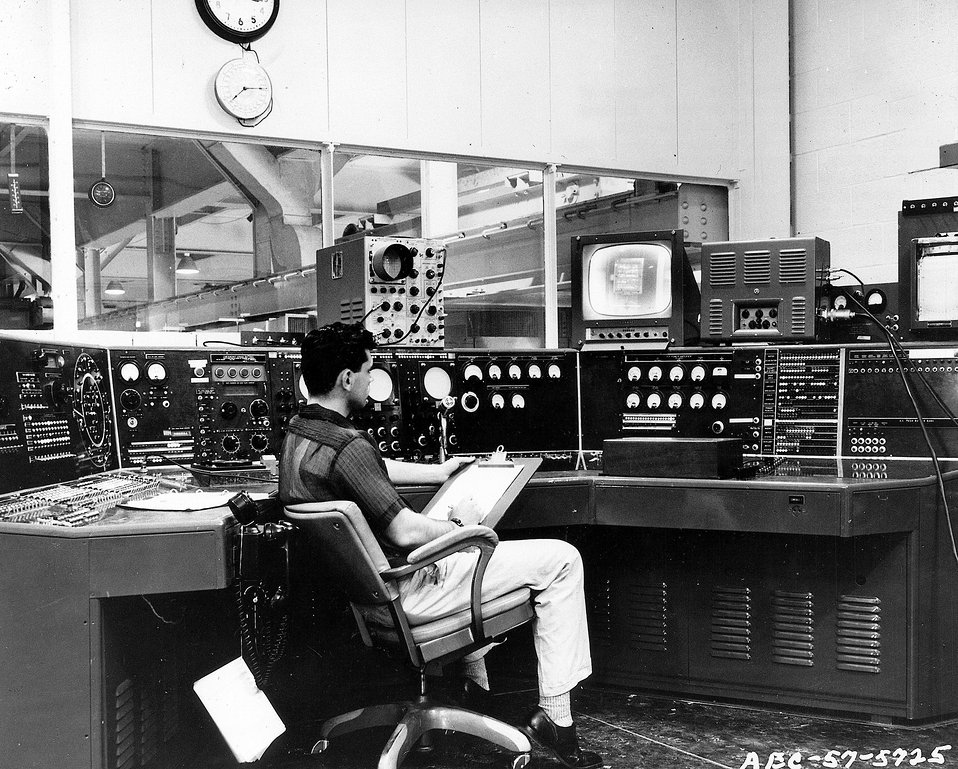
Picture of Sodium Iodide Mosaic used to view 3 Billion Electron Volt External Proton Beam from Cosmotron appears on TV screen at remote monitoring station. c. 1957